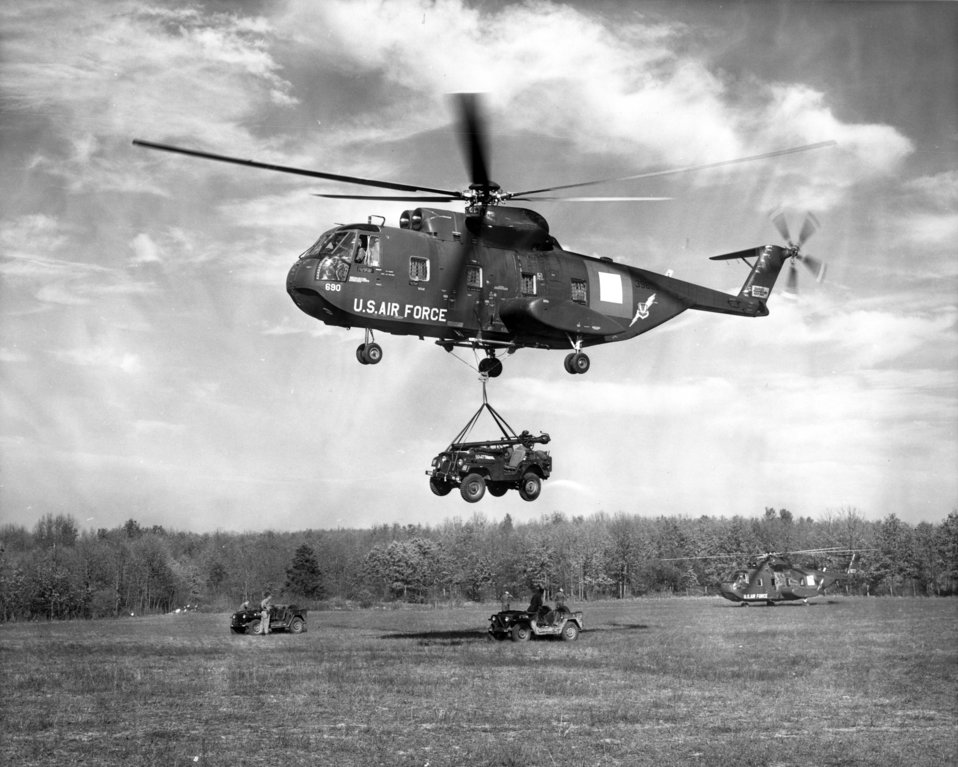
CH-3C helicopter

1960's -- FT. LEONARD WOOD, MO -- A U.S. Air Force CH-3C helicopter airlifts a 106mm recoilless rifle mount on a U.S. Army jeep from a rear area into the